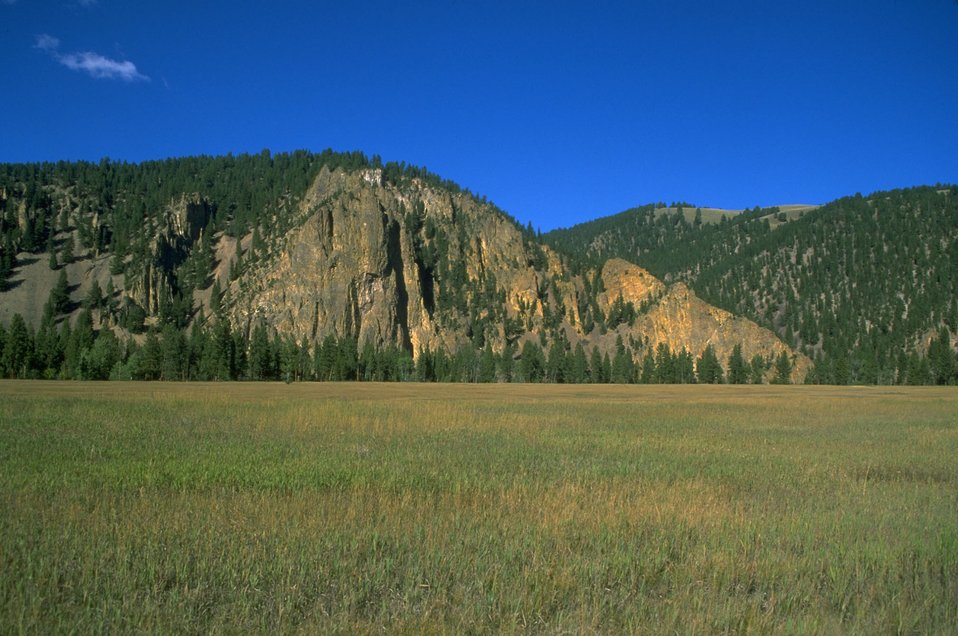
Squaw Rock ACEC (area of critical environmental concern)